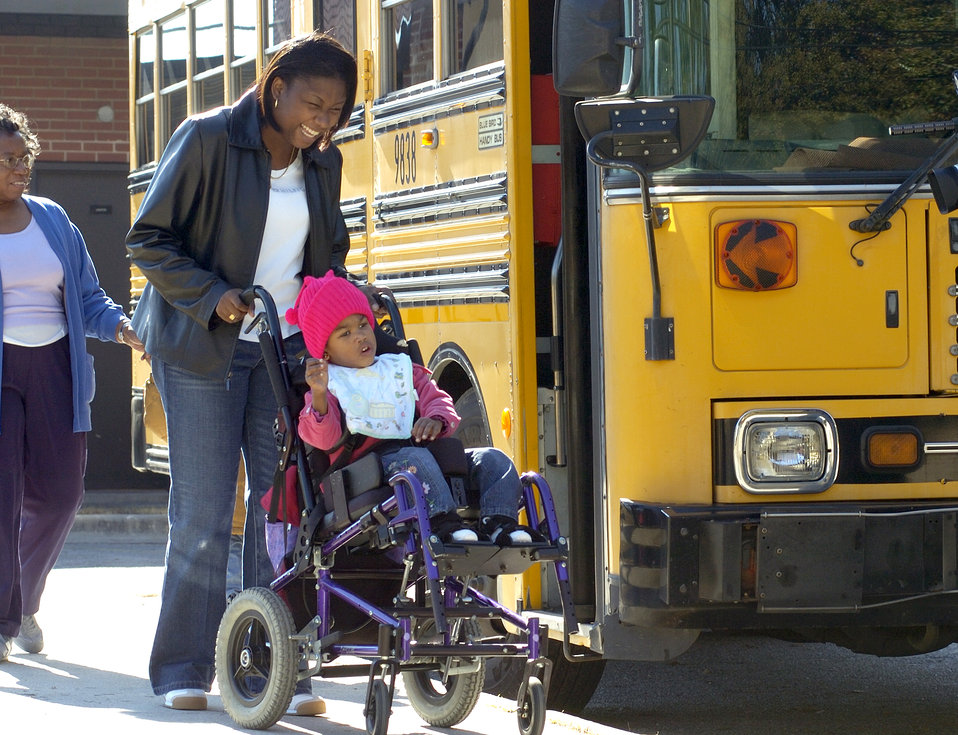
Hayes family

SAVANNAH, Ga., (AFPN) -- Diane Hayes wheels her daughter Kiera from school to physical and speech therapy here. The Hayes family was forced to evacuate Keesler Air Force Base, Miss., a day before Hurricane Katrina hit the Gulf Coast. Her husband, Staff Sgt. Herbert Hayes Jr., who returned on emergency leave after the storm, remains stationed in South Korea. Her daughter's school loaned Kiera a wheelchair until renter's insurance can replace the one ruined by Katrina.